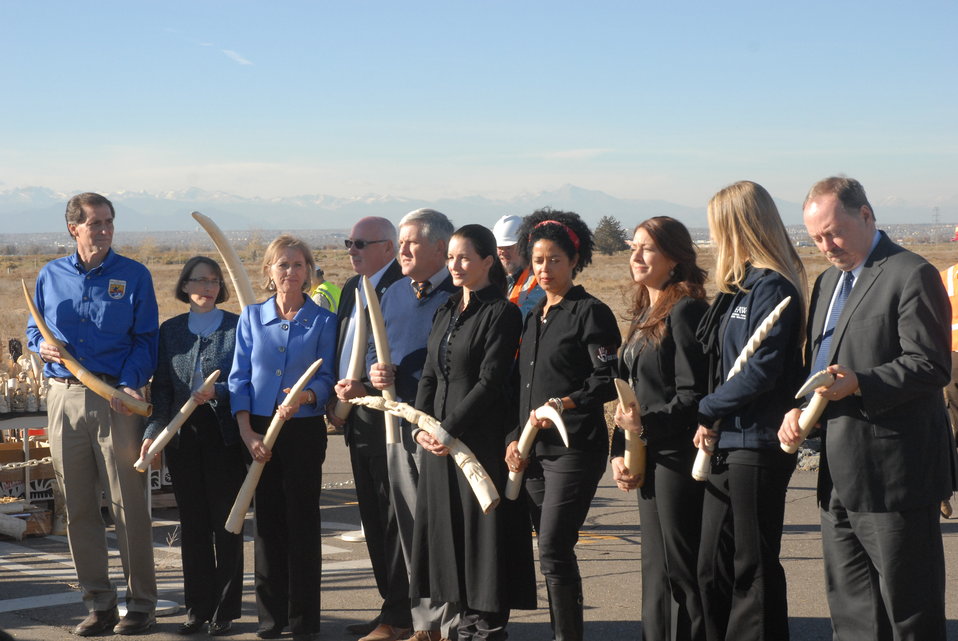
Guest speakers prepare to load ivory into the crusher

Left to right:

Dan Ashe - Director of the U.S. Fish and Wildlife Service
Judith Garber - Principal Deputy Assistant Secretary, Department of State, Bureau of Oceans and International Environmental and Scientific Affairs
Ginette Hemley - Senior Vice President, World Wildlife Fund - U.S.
Azzedine Downes - President and CEO, International Fund for Animal Welfare
David J. Hayes - Former Deputy Secretary of the U.S. Department of the Interior
Kristin Davis - Actress and Patron for the David Sheldrick Wildlife Trust
Dr. Paula Kahumbu - CEO of WildlifeDirect
Joely Fisher - Actress and IFAW Ambassador
Kristin Bauer - Actress and IFAW Ambassador
Robert G. Dreher - Assistant Attorney General, Department of Justice